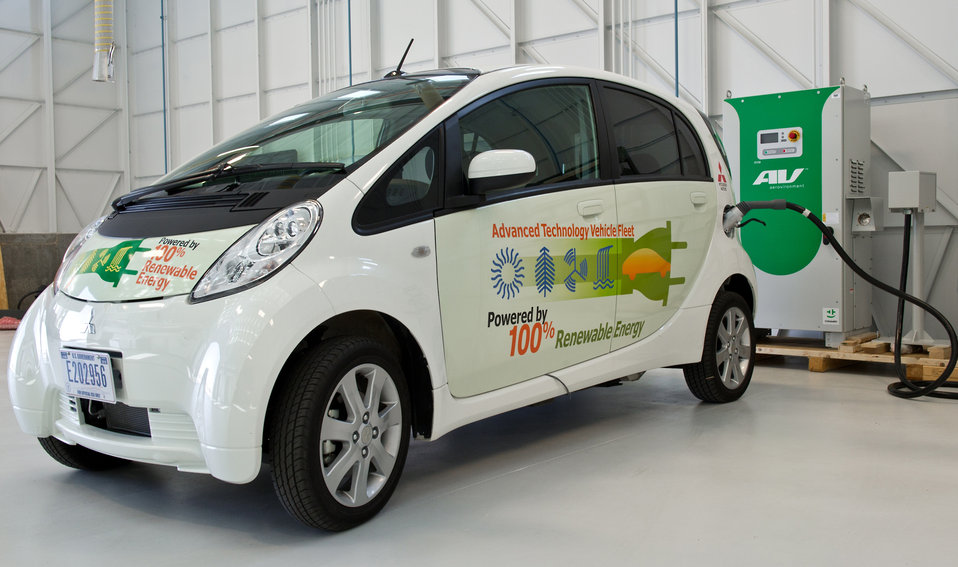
PEV at charging station

PEV charging in the VTIF.